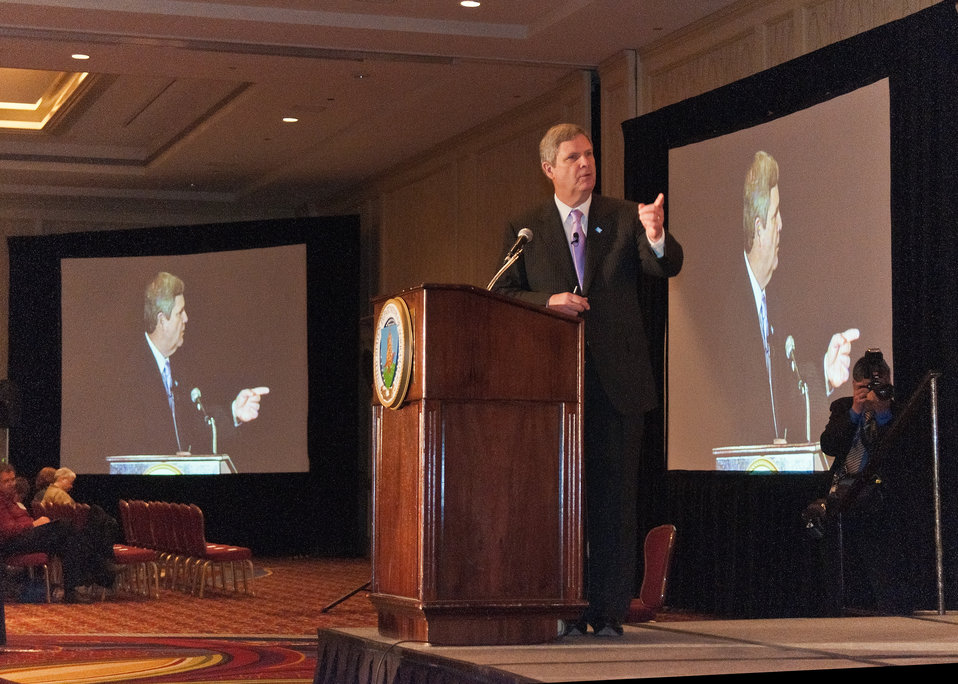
At the 2012 Agricultural Outlook Forum, “Moving Agriculture Forward” in Arlington, VA, held on Thursday, February 23, 2012, 7 former Secretaries of Agriculture sat on the plenary panel “Visions of the Future” hosted by current Agriculture Secretary Tom Vilsack. Secretary Vilsack moderates the panel discussions.